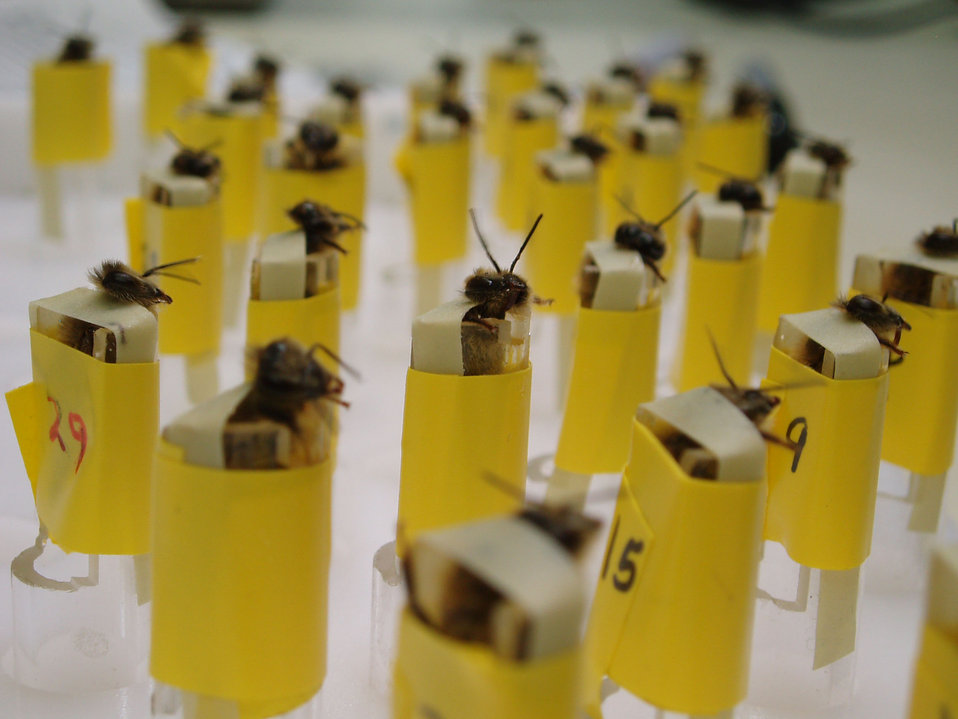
These bomb-sniffing bees are part of the stealthy insect sensor project at Los Alamos National Laboratory (LANL).

Associative learning techniques (also known as Pavlovian) are used to teach the honeybees to signal the presence of certain explosives of chemicals by sticking out their tongues. The bees are held in a container that allows air to flow through while a camera detects their response. The container is designed for use at security checkpoints (airports, military bases, etc.) to discreetly check for explosives.